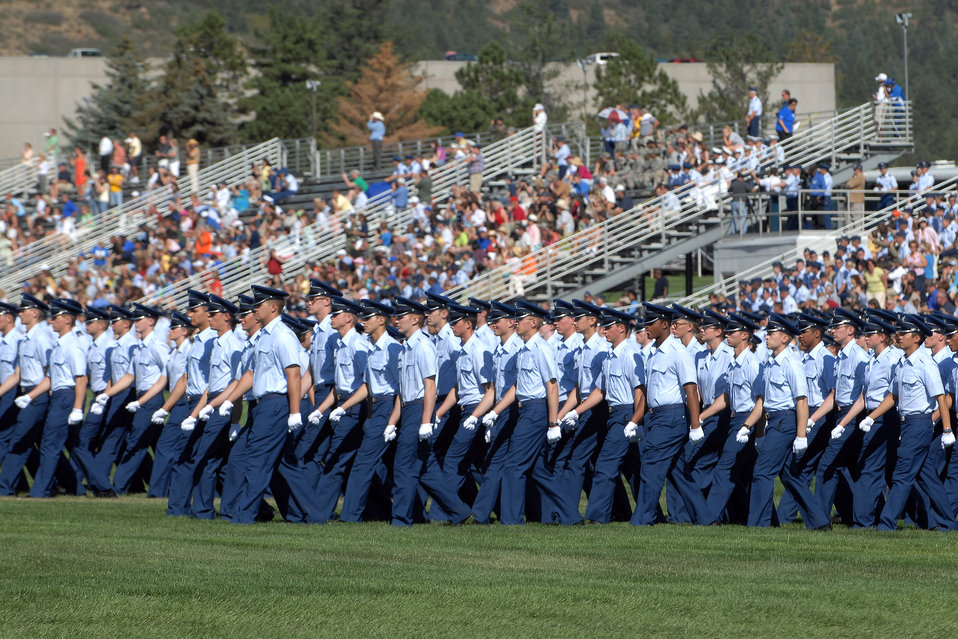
Academy cadets participate in Acceptance Day parade

U.S. Air Force Academy basic cadets file into position Aug 6 for Acceptance Day ceremonies at the Stillman Parade Field near Colorado Springs, Colo.